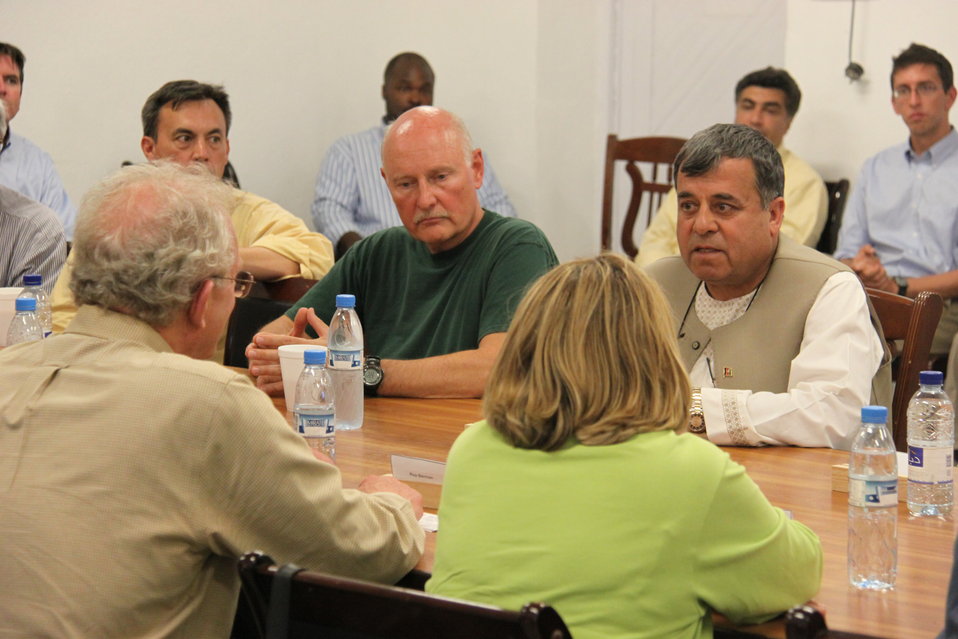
Meeting with Local Leaders in Kandahar